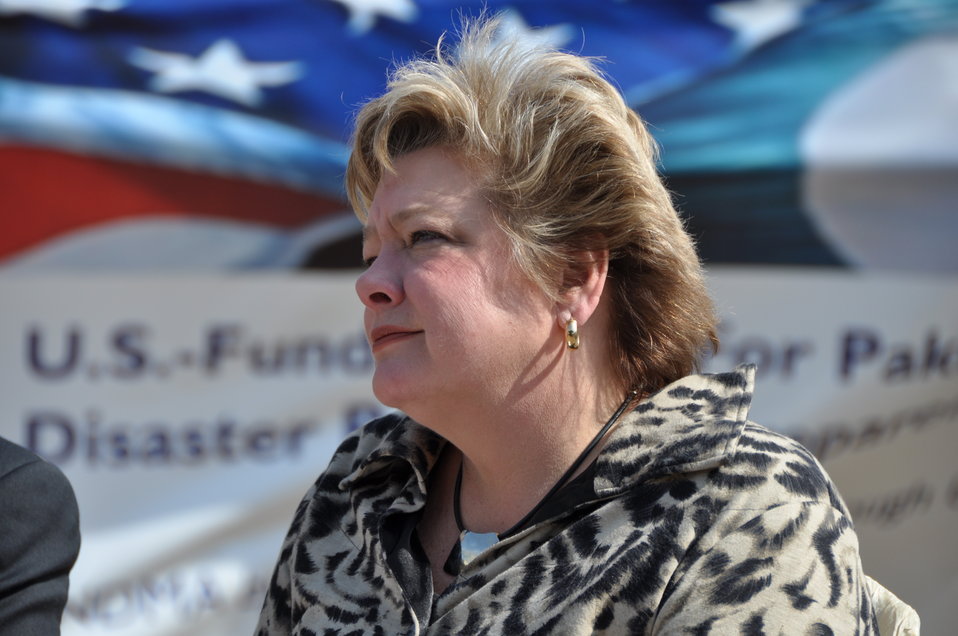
USAID Deputy Mission Director Karen Freeman looks on during the handover of the 858 tents that the U.S. Government has provided to NDMA to help boost the country’s disaster preparedness.

For more information on the U.S. assistance related to the 2010 and 2011, Please see

www.youtube.com/user/USAIDPakistan?feature=guide#p/u/4/-K...
www.youtube.com/user/USAIDPakistan?feature=guide#p/u/5/JG...
www.youtube.com/user/USAIDPakistan?feature=guide#p/u/7/nh...
www.youtube.com/user/USAIDPakistan?feature=guide#p/u/8/Jr...
www.youtube.com/user/USAIDPakistan?feature=guide#p/u/9/gZ...
www.youtube.com/user/USAIDPakistan?feature=guide#p/u/12/q...
www.youtube.com/user/USAIDPakistan?feature=guide#p/u/20/v...

Or Visit USAID
pakistan.usaid.gov

Check our videos and photos on YouTube and Flickr:
www.youtube.com/user/USAIDPakistan
www.flickr.com/photos/usaid pakistan